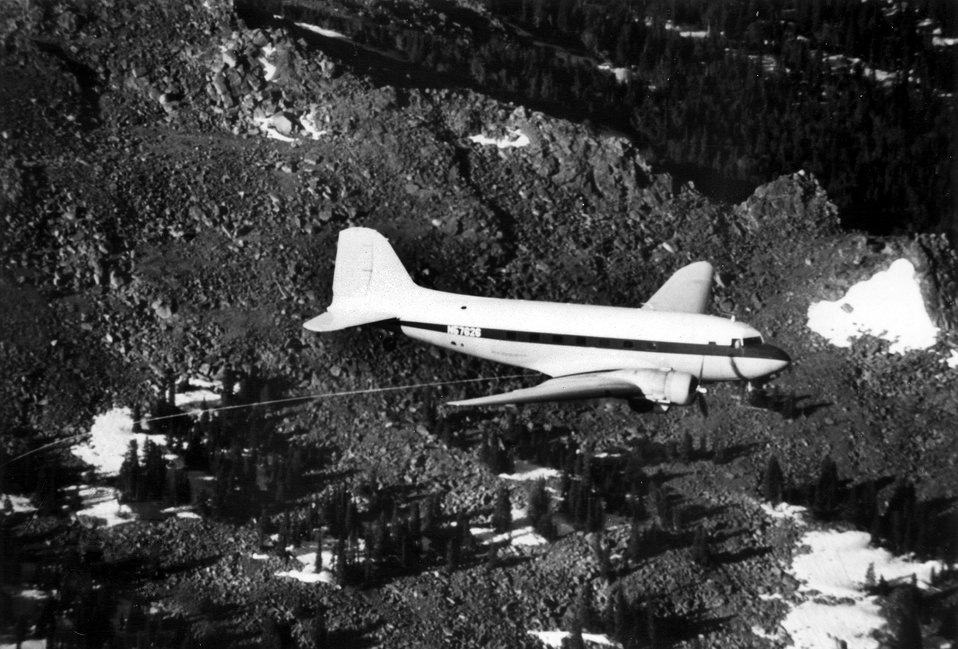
Texas Instruments DC-3 flying an airborne survey in Wyoming under an AEC contract. Data are used by the AEC to evaluate potential uranium resources and will be released to the public to stimulate on-the-ground exploration of favorable areas. c. undated